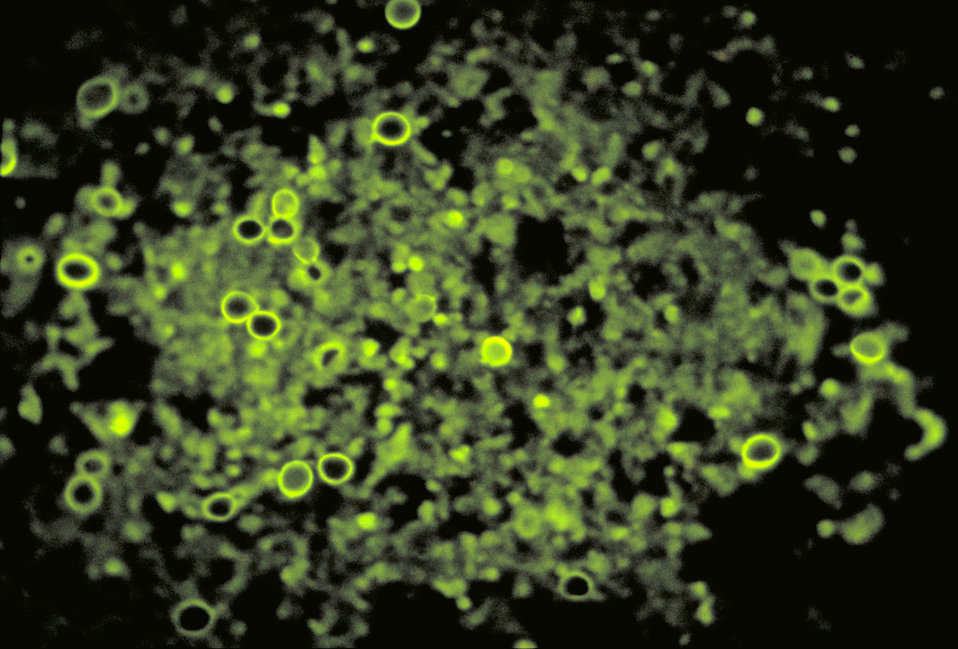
Histopathology of blastomycosis, lung of wolf. Yeast cells of Blastomyces dermatitidis. FA stain.